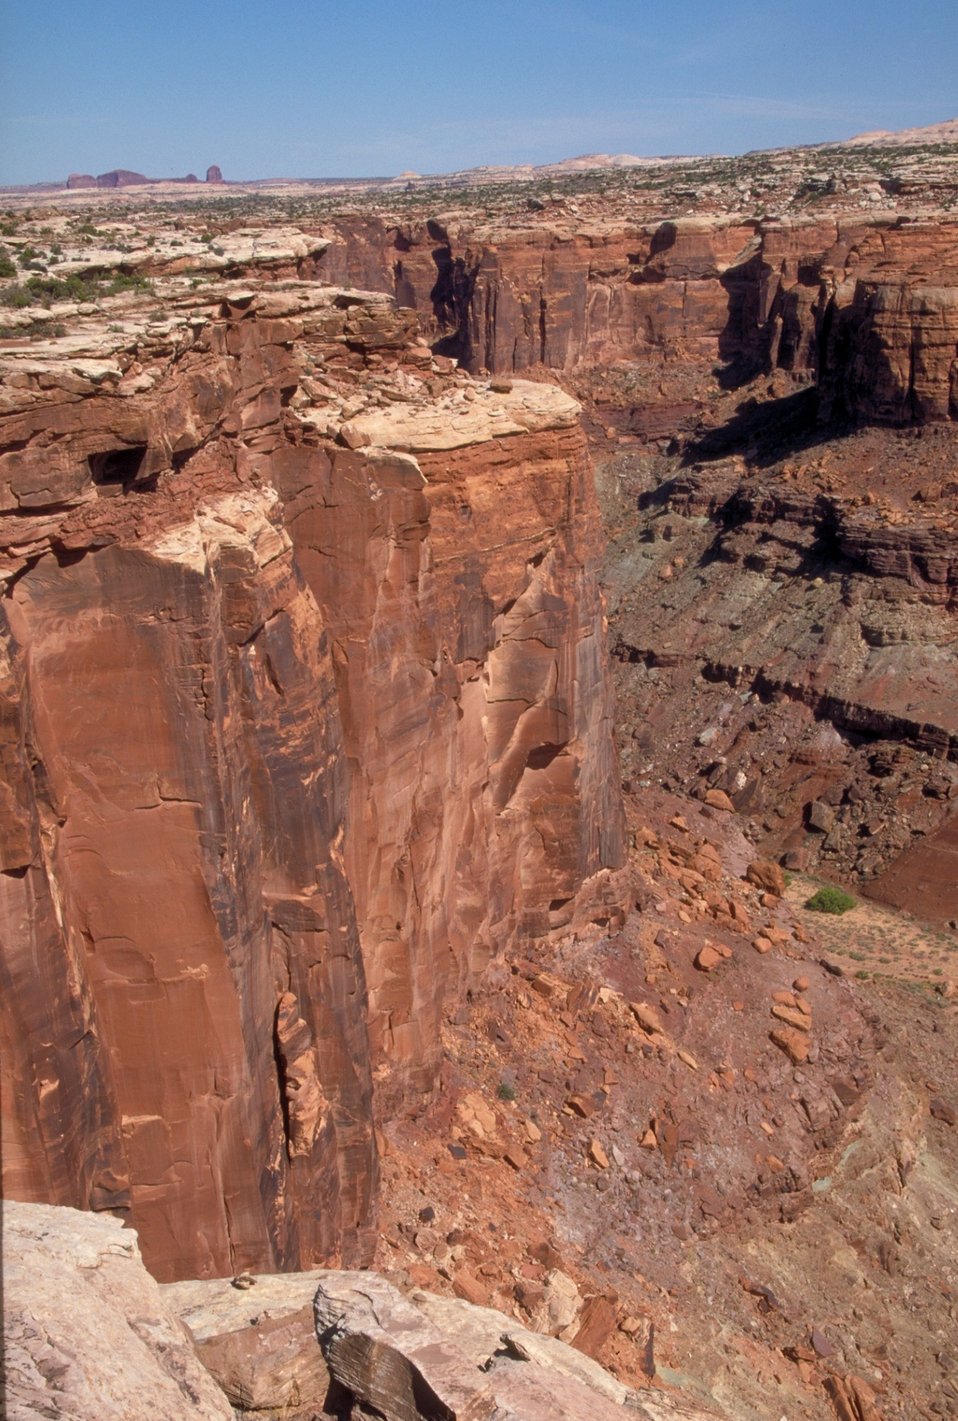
Mouth of Spring Canyon near the Green River near Moab, Utah.